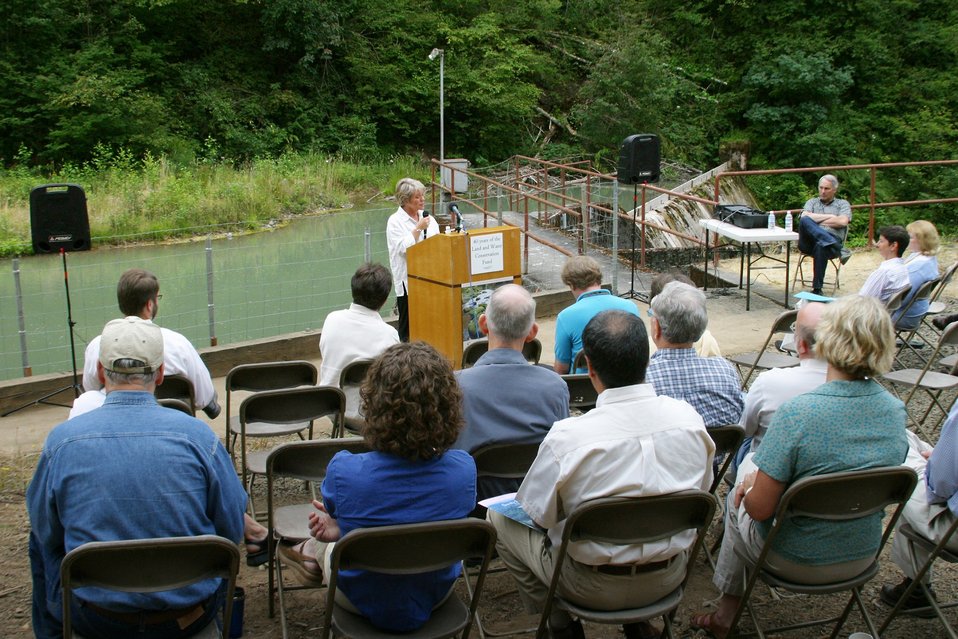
Kathleen Clarke, BLM Director, presents the Four C's Award at the Little Sandy Dam to PGE and the Western River Conservancy.